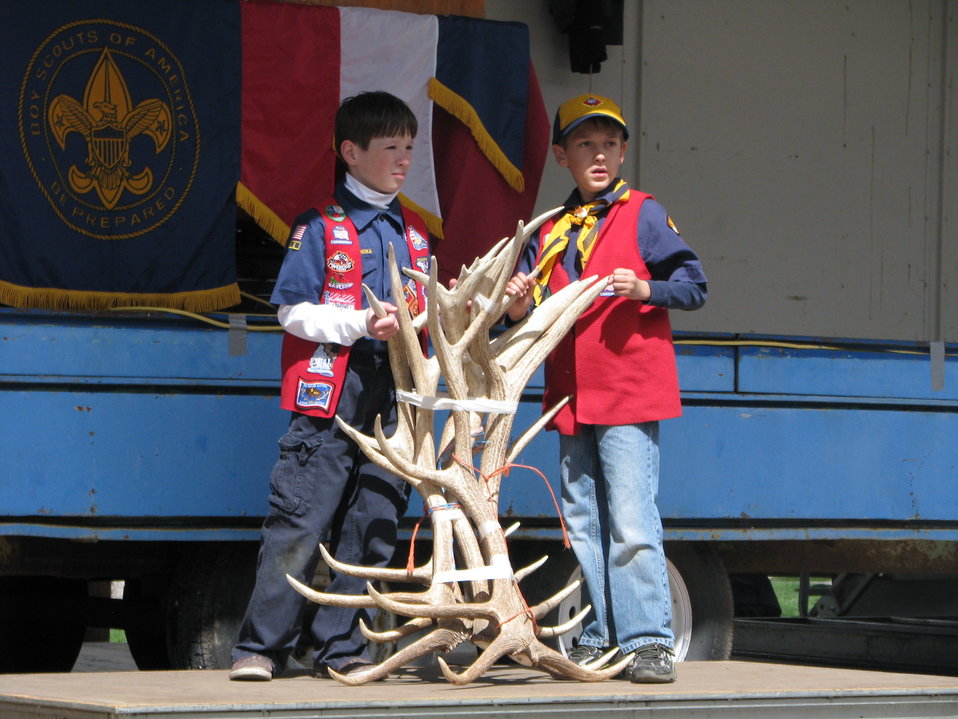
Scouts Disply Antlers

Jackson District Boy Scouts hold up antlers on stage for bidders to see during the antler auction.